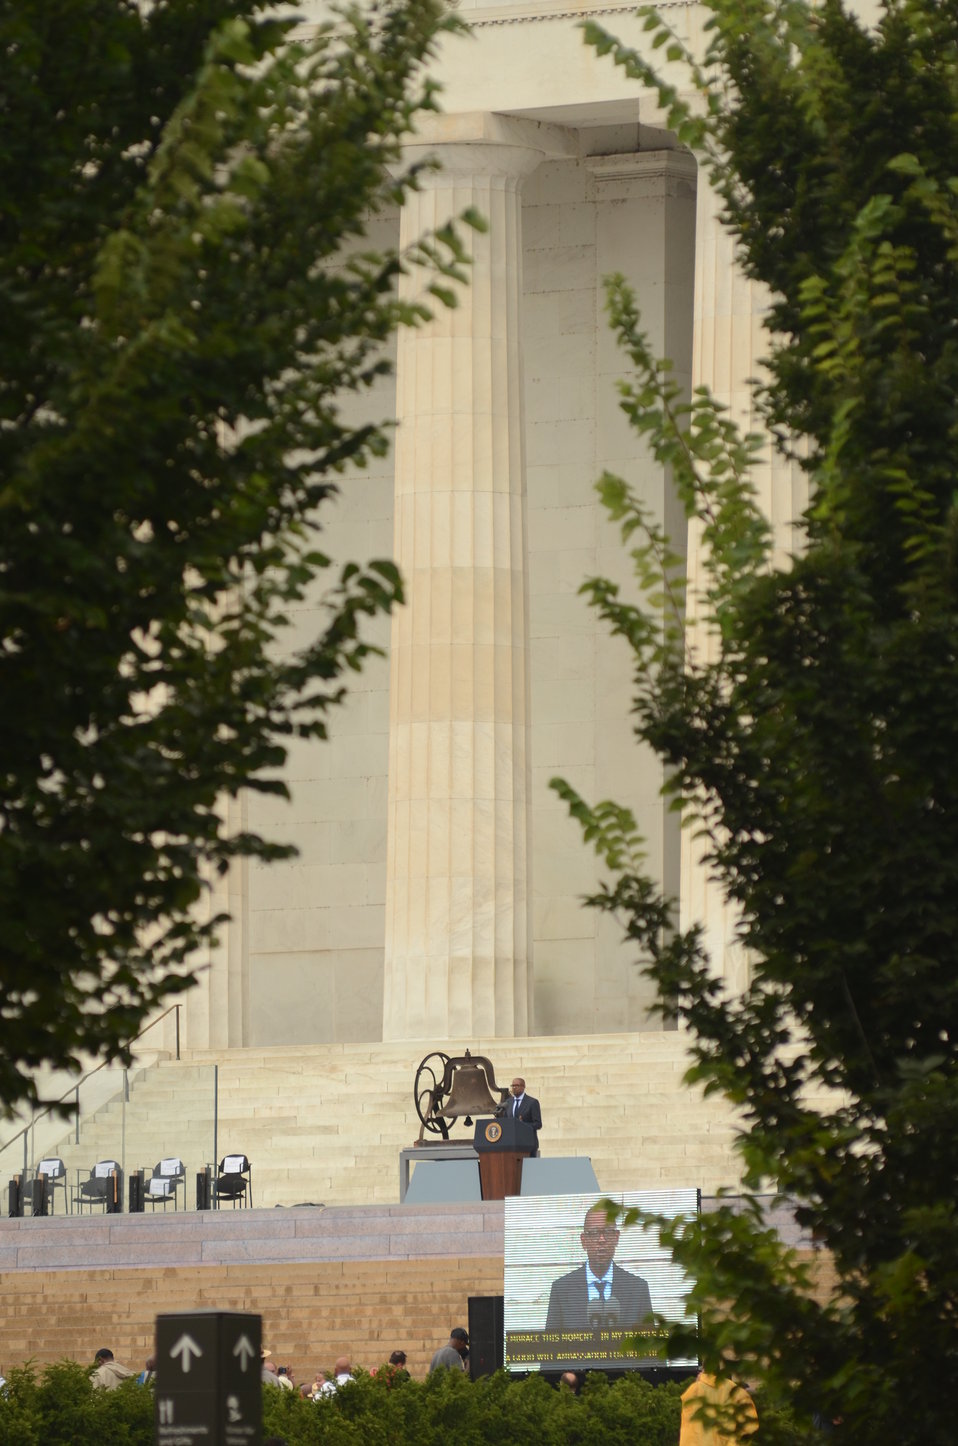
Forest Whitaker speaking at the Lincoln Memorial for the March on Washington, D.C., on Wed., Aug. 28, 2013.